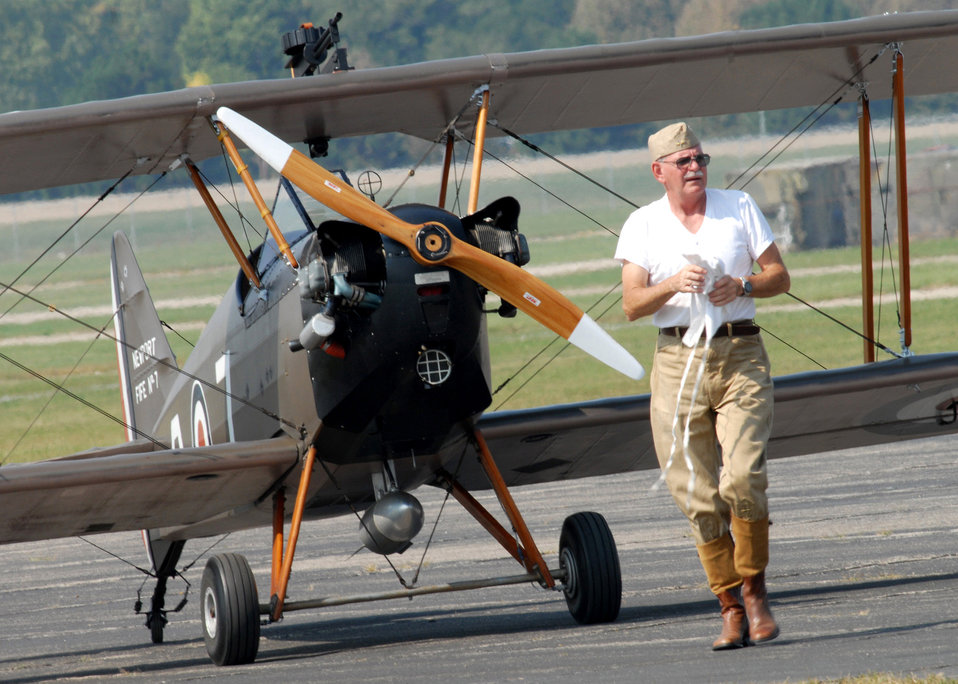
World War 1 Fly In

A pilot walks from his aircraft after landing at the Dawn Patrol Rendezvous World War I Fly-In Sept. 22 on the grounds of the National Museum of the United States Air Force in Dayton, Ohio. Activities included period re-enactors in a war encampment setting, era automobiles on display and participating in a parade, flying exhibitions by WWI radio-controlled aircraft, and a collector's show for WWI items.